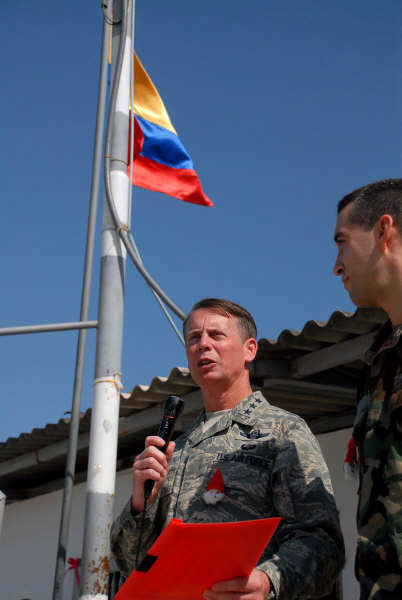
Commander brings holiday cheer to Ecuadorian schools

Lt. Gen. Glenn F. Spears presents a certificate to the Angelica Flores School for the Disabled Dec. 10 in Manta, Ecuador, pledging money for school repairs and supplies. General Spears was accompanied by members from the USSOUTHCOM Headquarters and Airman from the Forward Operating Location within the Ecuadoarian Eloy Alfaro air force base in Manta. General Spears is the U.S. Southern Command deputy commander.